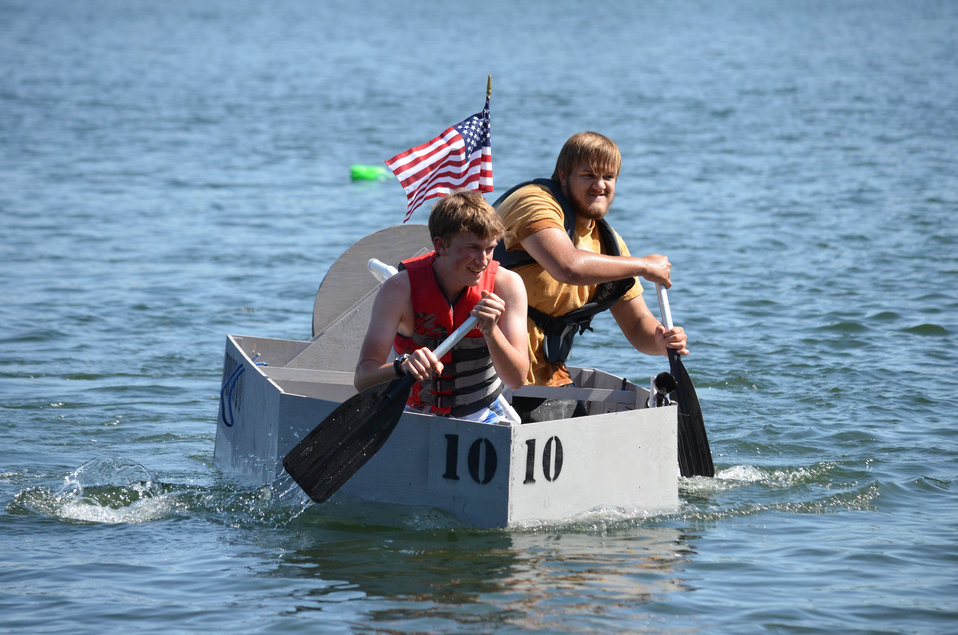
District employees judge annual Folsom High School Regatta

Students paddle their boat in the Folsom High School Regatta at Negro Bar State Park in Folsom, Calif., May 24, 2013. High school and middle school students constructed boats from cardboard, plywood, or other buoyant materials to compete in the race.